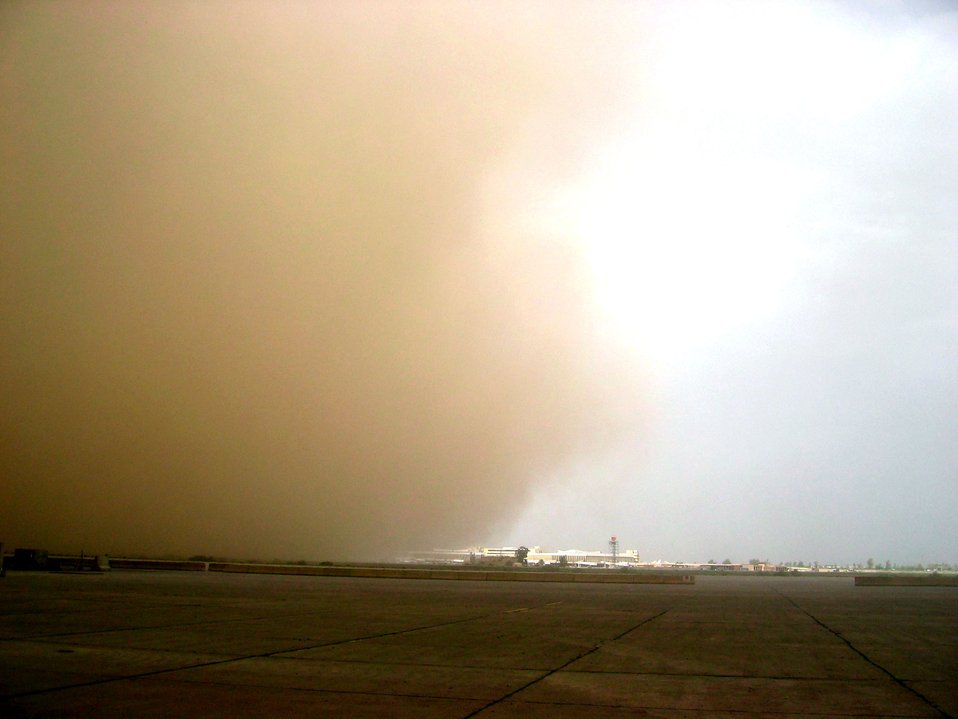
Sand storm

A sand storm engulfs the Sather Air Base, Iraq, flightline on Monday, May 8, 2006. The storm quickly engulfed the Baghdad area and caused near-zero visibility.